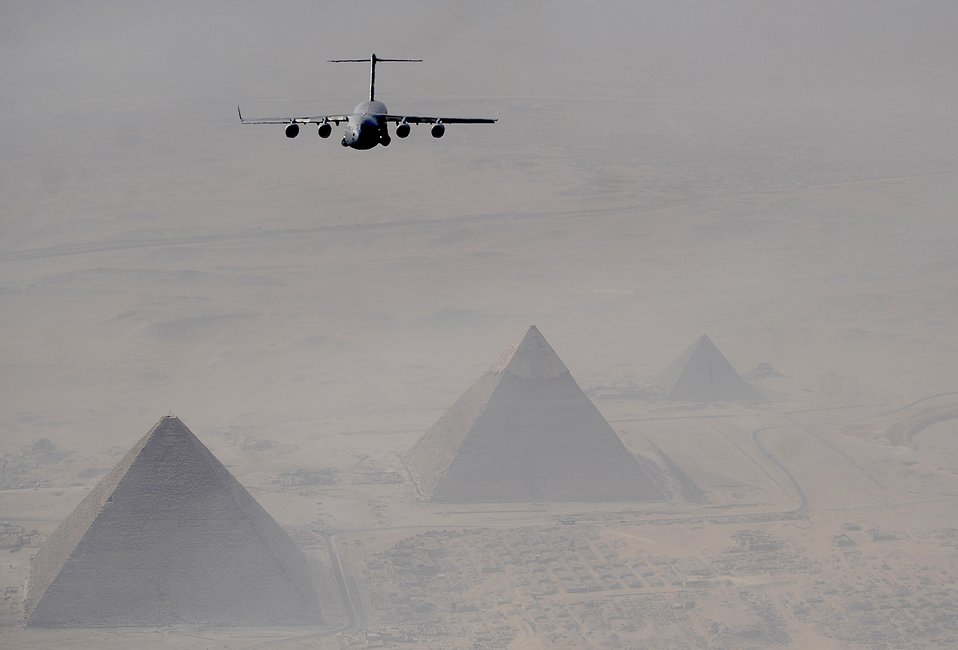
Friendship jump over Egypt

A C-17 Globemaster III flies over Cairo with the Pyramids of Giza in the distance Oct. 15, 2009 during Exercise Bright Star. Bright Star is a joint international military airdrop exercise that strengthens and enhances the cohesiveness of each country's participating forces. This year's participants include the United States, Egypt, Kuwait, Pakistan, Germany and Jordan. The C-17 crew is from the 437th Airlift Wing at Charleston Air Force Base, S.C.